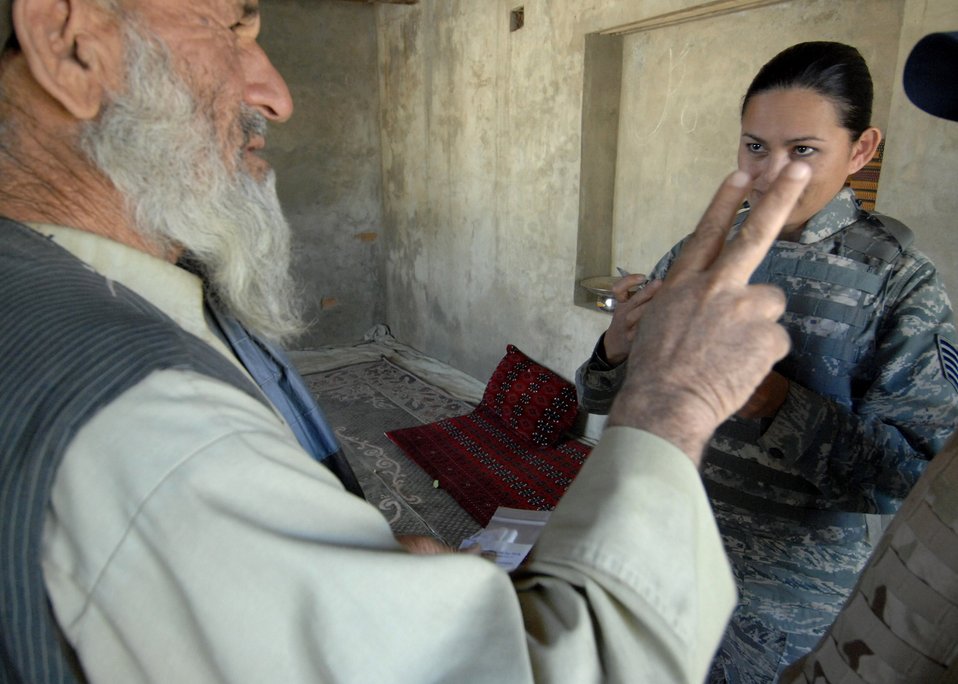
Medical mission provides care in Afghanistan

Tech. Sgt. Joy Flumerfelt listens to a villager as he explains his symptoms at a medical civil action project held Oct. 4 at a small village near Bagram Air Base, Afghanistan. Sergeant Flumerfelt is a medical technician with the 455th Air Expeditionary Wing.